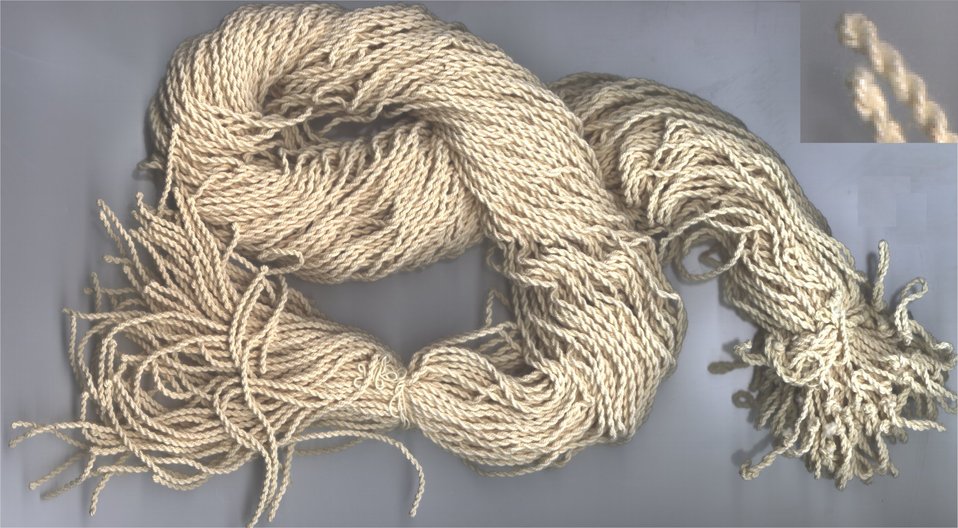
Bundle of cotton yo-yo strings purchased from Infinite Illusions several years ago. Inset shows the two strand, closed end construction unique to yo-yo strings.